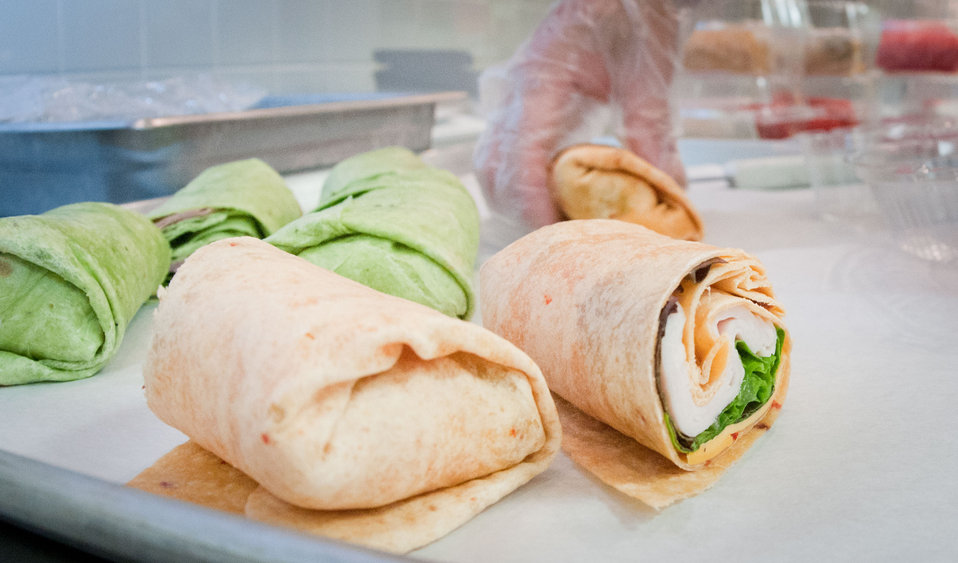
Turkey Wraps prepared on site for the school lunch program at Nottingham Elementary School in Arlington, VA, on Wednesday, October 12, 2011. Today's menu included roasted chicken, roasted butternut squash with dried cranberries, farm fresh mixed lettuce salad, turkey wraps, pita wedges, hot muffins, carrots, pears and more.